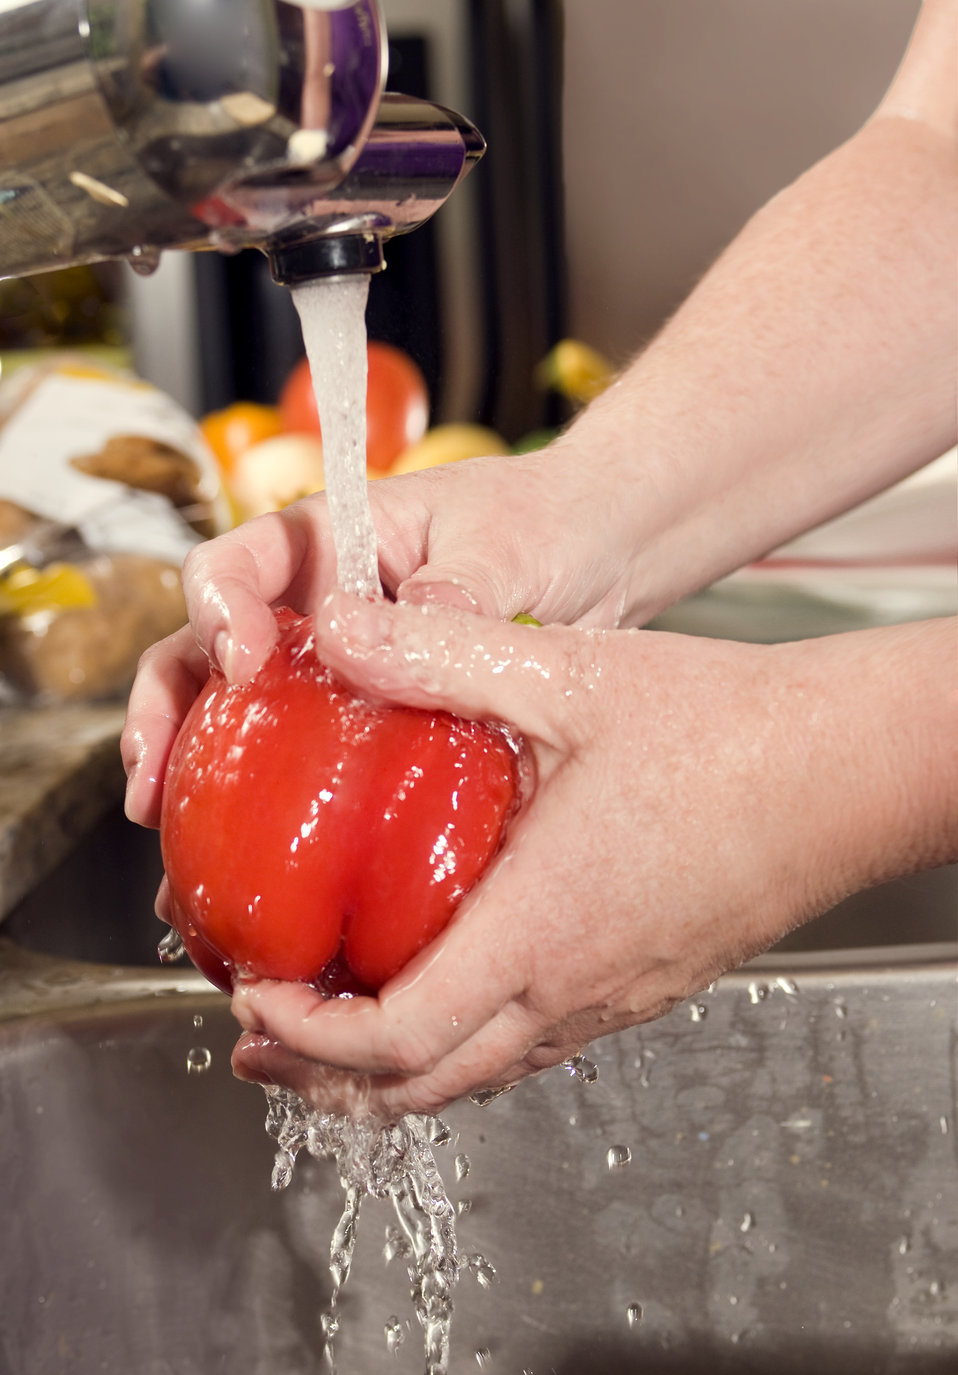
Pictured here in this kitchen setting were the hands of a woman who'd just purchased some fresh groceries, which could be seen in the background, and was in the process of washing a red bell pepper under some fresh running tap water, prior to preparing it in a meal.